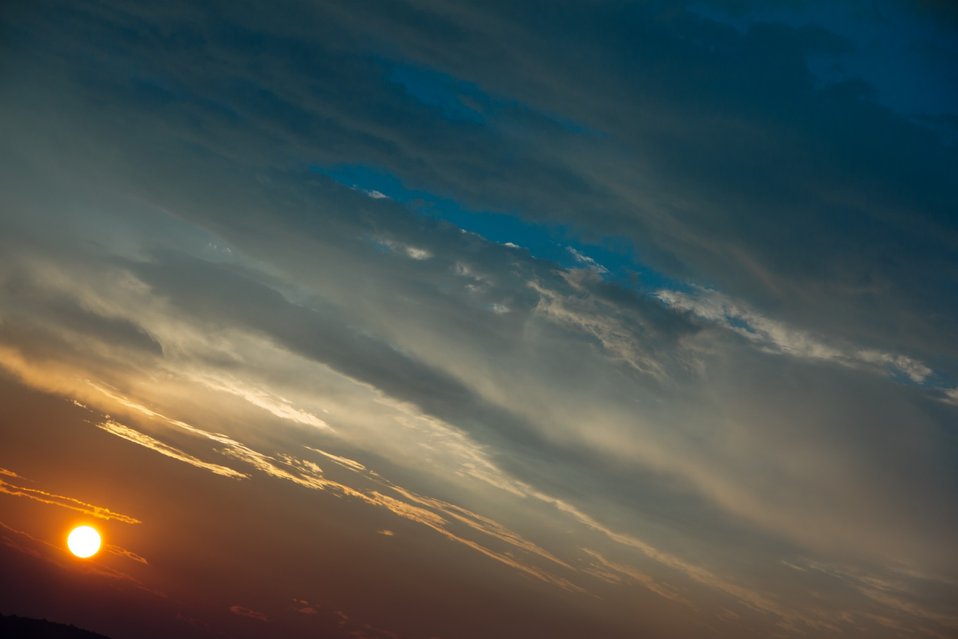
West romania

Picture of a sunset in romania.